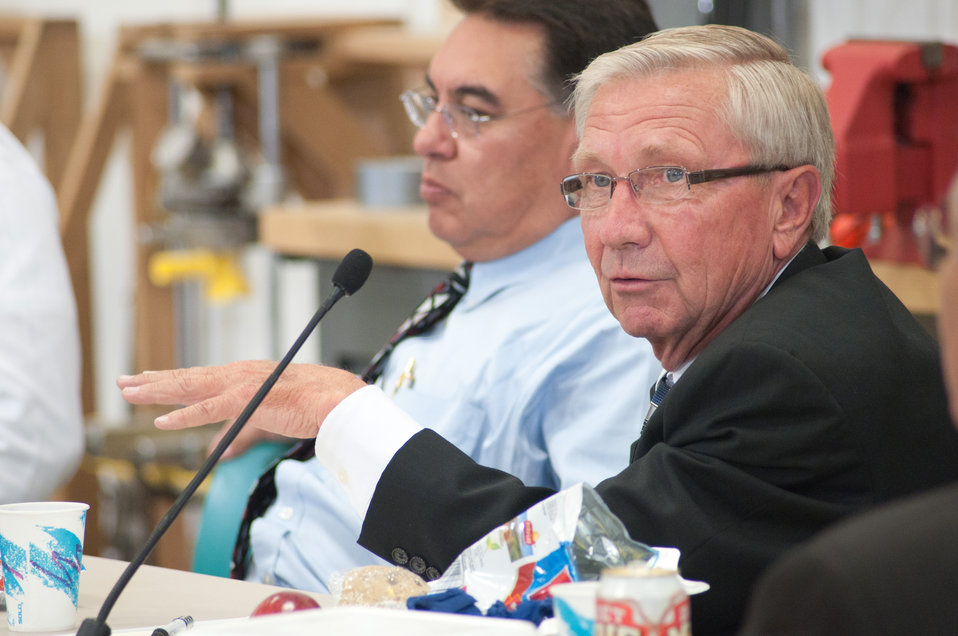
Brookings County Commissioner, SD, Don Larson (right) speaks to U.S. Department of Agriculture Secretary and chair of the White House Rural Council, Tom Vilsack, and stakeholders, during a meeting at the Northeast Iowa Community College, IA, for the White House Rural Economic Forum, on Tuesday, August 16, 2011.